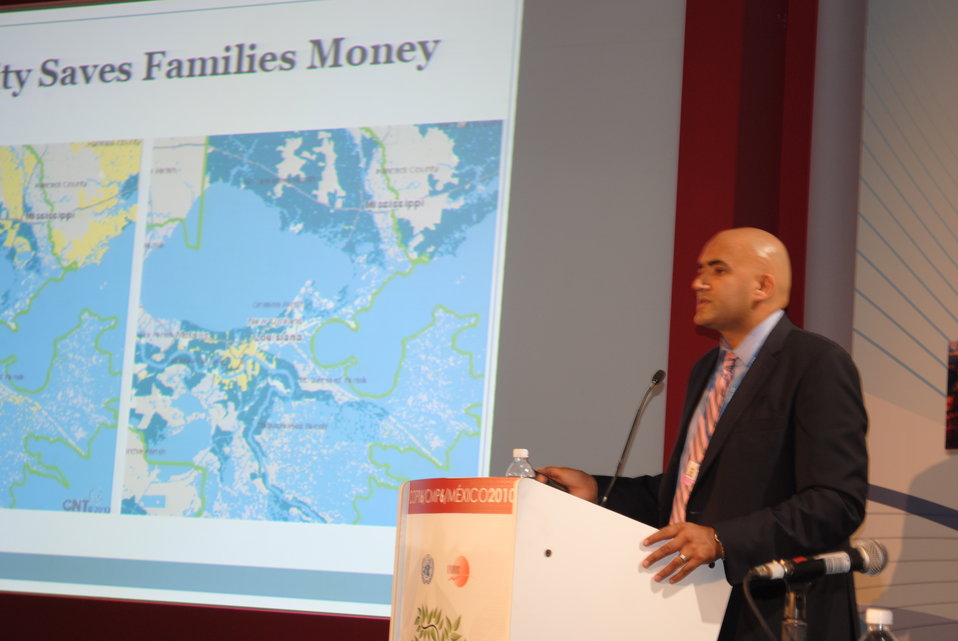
U.S. Department of Transportation's Shailen Bhatt Presents “Livability”

Shailen Bhatt of the U.S. Department of Transportation presents the side event, “Livability,” at the U.S. Center at COP-16 in Cancun, Mexico, on December 1, 2010.